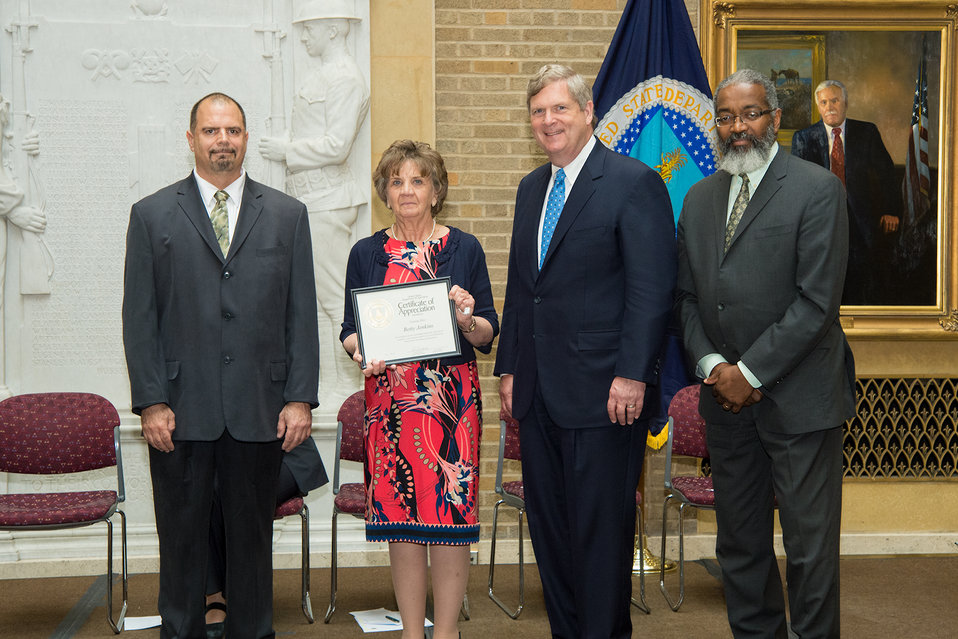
U.S. Department of Agriculture (USDA) Office of Executive Services (OES) Director Sally Liska accepts the Unsung Hero Award for USDA DM Betty Jenkins from USDA’s Organization of Professional Employees President (OPEDA) Louis Iacoletti, Agriculture Secretary Tom Vilsack and USDA Assistant Secretary for Administration Dr. Gregory Parham at USDA in Washington, D.C. on Wednesday, May 7, 2014.